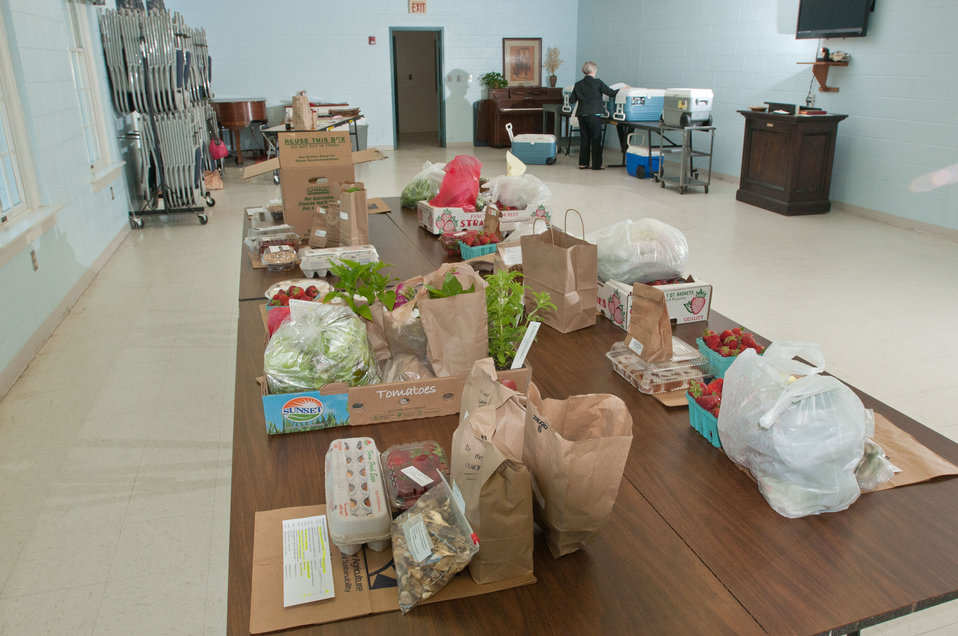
Customized orders at the Bon Air United Methodist Church pick-up point, in Richmond, VA, are the main difference between Fall Line Farms food hub and traditional food cooperatives (that provide identical orders) on, Thursday, May 5, 2011. This is one of several pick-up points in the Richmond area that are open every Thursday afternoon. This local food hub offers a wide variety of household food staples and specialty items. Members can pick their customized orders from an ever changing inventory of fruits, vegetables, meats, soaps, eggs, cheeses, flowers, honey, pastas, sauces, syrups, baked goods, mushrooms, flour and grains. Suppliers post what they have on a Lulus Local Food online listing and customers can make their selection. Every Thursday suppliers deliver orders to, one of several pick-up points, designated by the customers in or around the Richmond area.